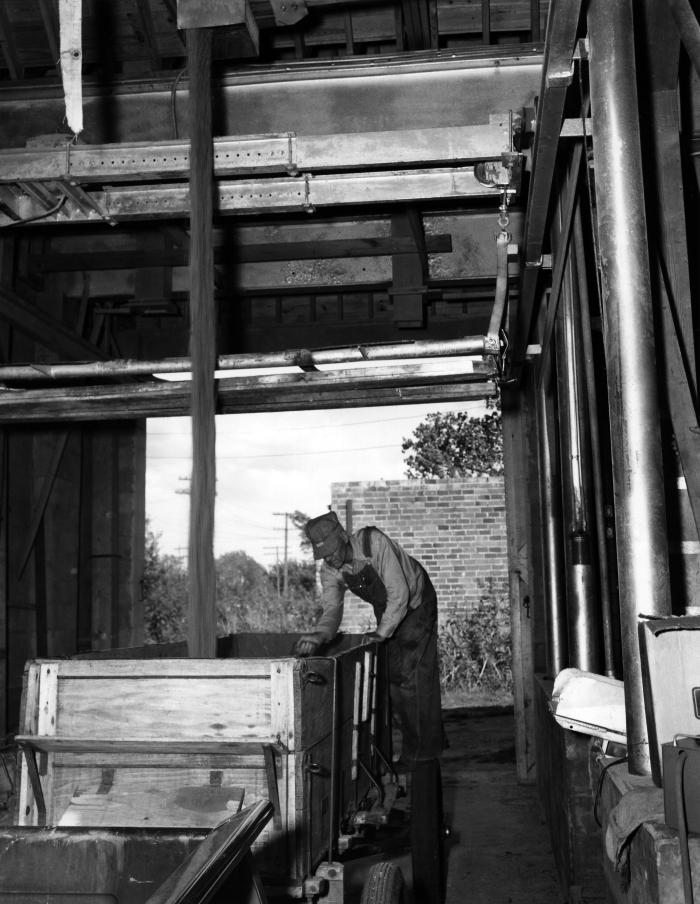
This October, 1951 photograph was provided by the Center for Disease Control's (CDC), National Institute for Occupational Safety and Health (NIOSH). The image depicted an Oklahoma farm worker in the process of unloading grain from an overhead shoot, and was filling a 'bin', or grain wagon below. Of importance, was the fact that the farmer was not wearing any respiratory protective devices such as a filtered breathing mask. 'Grain dust' results from having harvested, and stored a grain crop such as corn. It is subsequently liberated during the transfer processed prior to shipping. The dust, which billows up, and is sometimes inhaled by farm workers during transfer, can carry high amounts of allergens, fungi, insects, and pesticides. Inhalation of certain moulds can cause a potentially-fatal disease known as 'Farmer's Lung', also known as 'extrinsic allergic alveolitis', or 'hypersensitivity pneumonitis'.